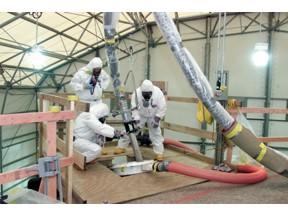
Fernald Closure Project

Workers removing thorium-bearing waste from Silo 3 at the Fernald Closure Project in Fernald, OH. All cleanup activities at the site are now complete.